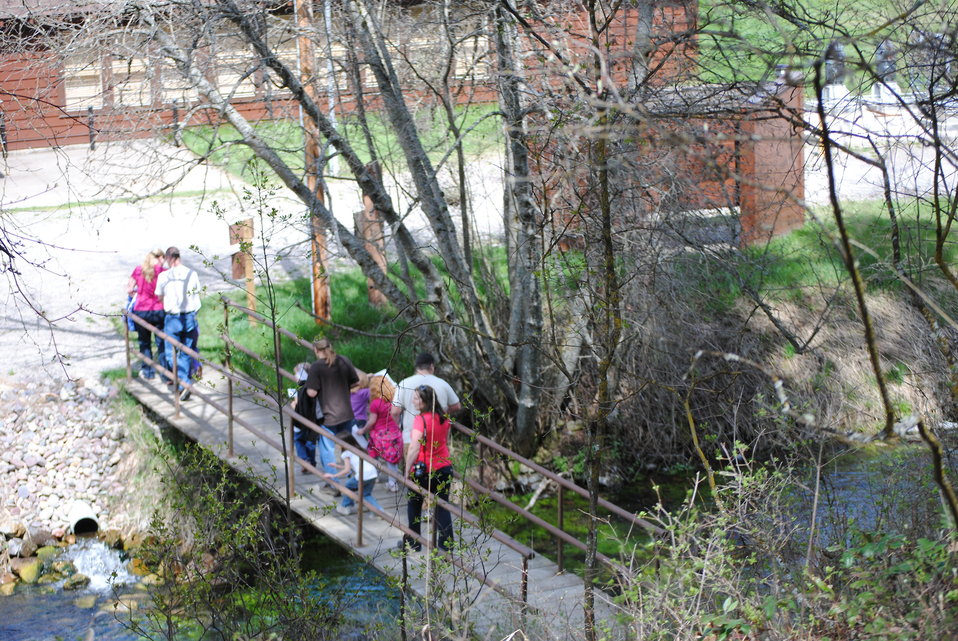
Creston National Fish Hatchery provides many educational opportunities for area schools and families.